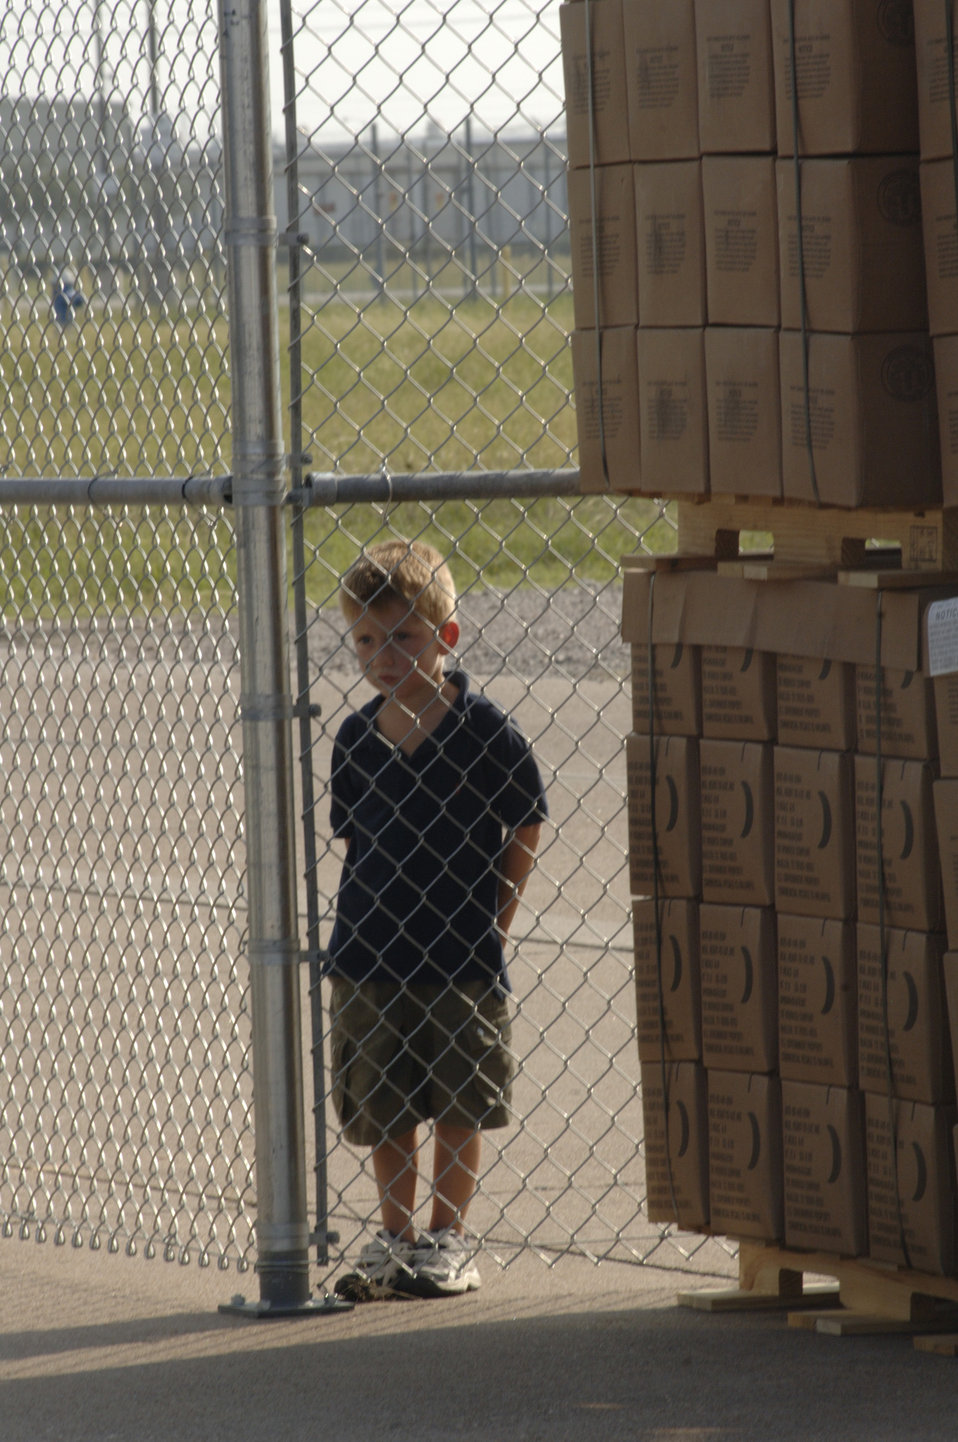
Meals Ready to Eat

ELLINGTON FIELD, Texas - Thomas Sap observes aircraft activity here in support of Joint Task Force-Rita. The young Dutch plane spotter comes to the airfield every weekend. Beside him are pallets of meals ready to eat that were airlifted by 1-149th Aviation Battalion and the U.S. Coast Guard Air Station Houston.